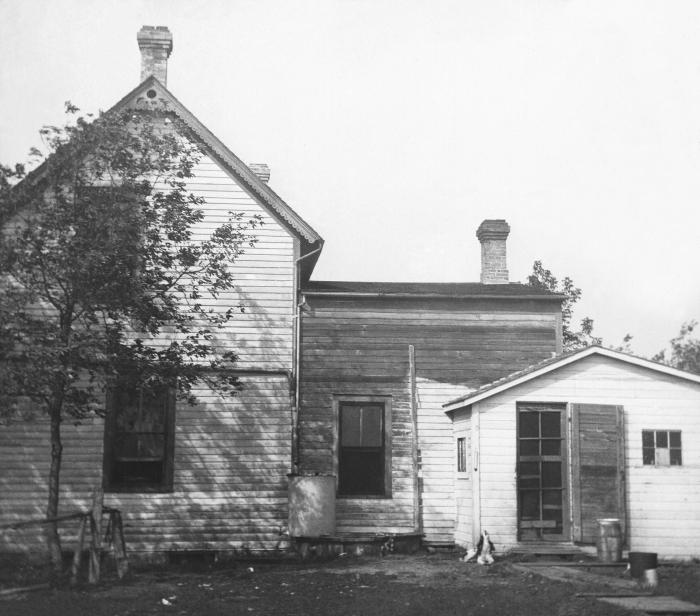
In this historic 1909 photograph, an improperly constructed cistern could be seen located adjacent to a typical Minnesota farm residence. It was one of a series of instructional photos used by the Minnesota Board of Health to train public health workers.